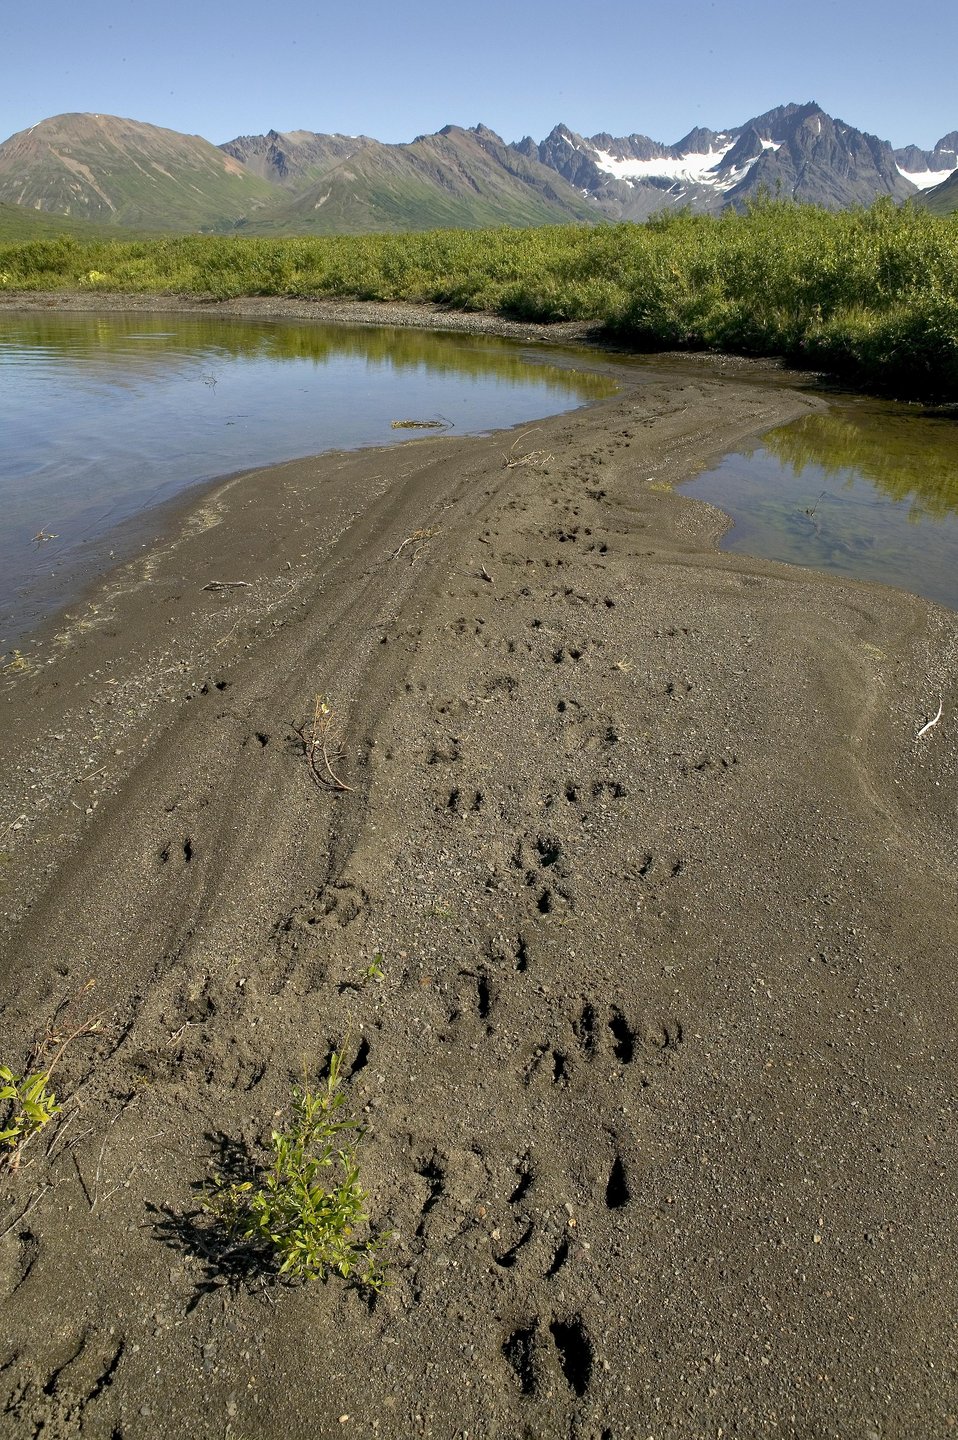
Togiak National Wildlife Refuge